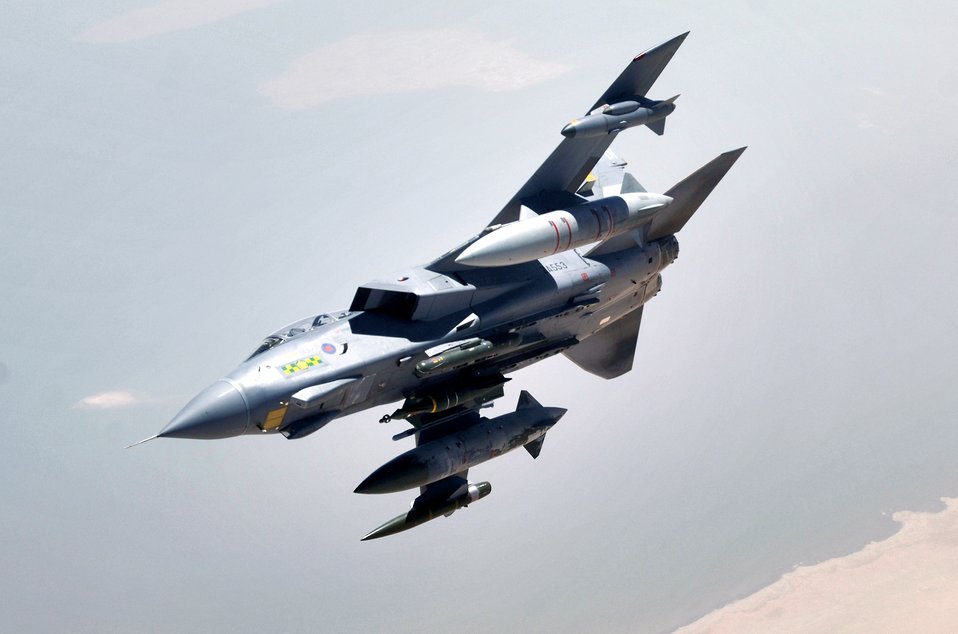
Tornado power

An RAF Tornado GR-4 pulls away from a KC-135 Stratotanker after refueling on Sunday, May 14, 2006. The Tornado and crew are from the 617th Squadron at RAF Lossiemouth, Scotland. The KC-135 and crew are deployed to the 340th Expeditionary Air Refueling Squadron from the 905th Air Refueling Squadron at Grand Forks Air Force Base, N.D.